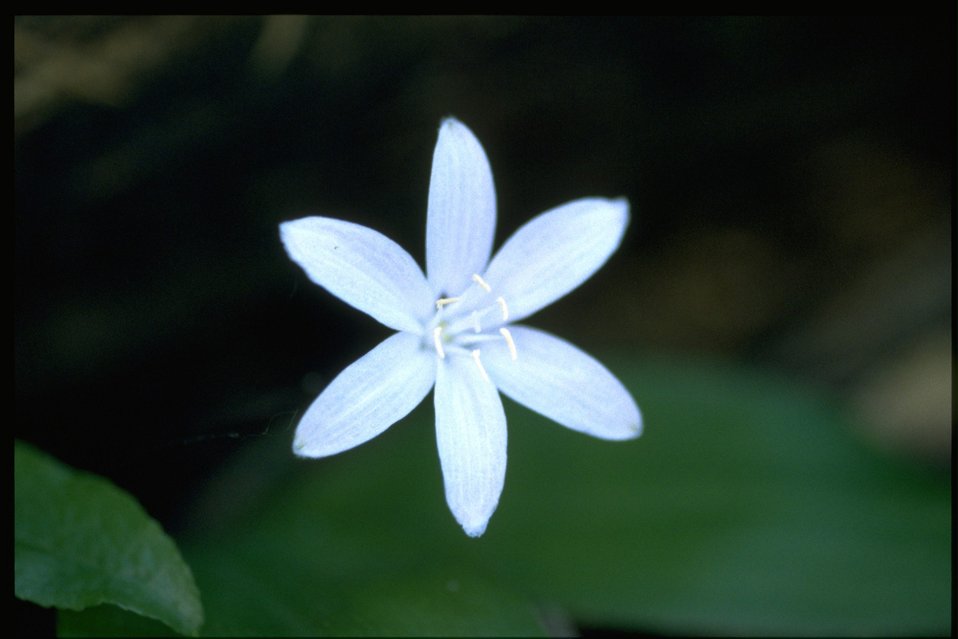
Medium shot of Clintonia uniflora.